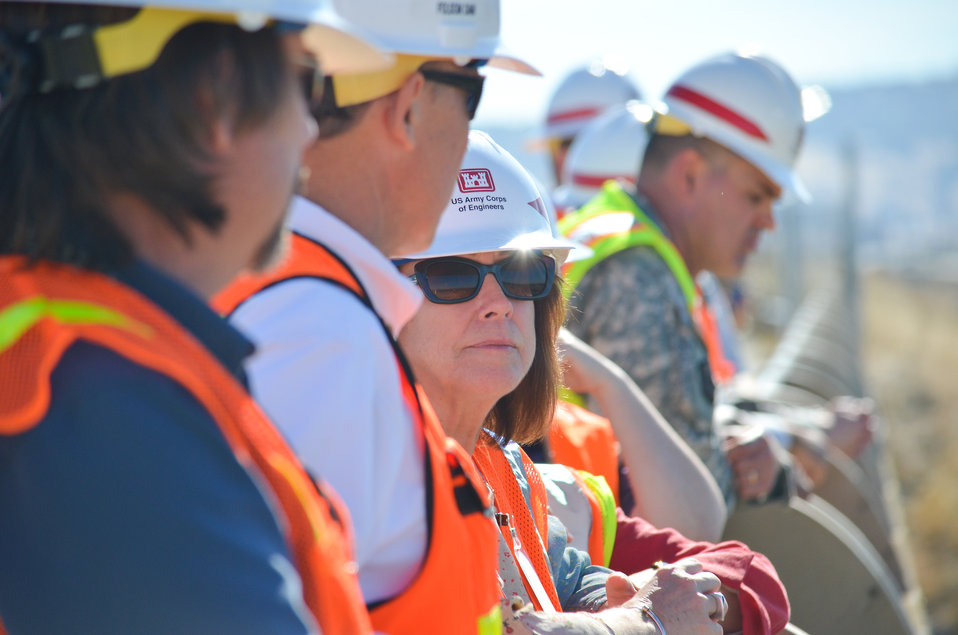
Secretary Darcy visits Folsom Dam Joint Federal Project

Jo-Ellen Darcy, Assistant Secretary of the Army for Civil Works (third from left), checks-in on progress on the Folsom Dam Joint Federal Project in Folsom, Calif., Sept. 27, 2011. The JFP is a joint effort of the U.S. Army Corps of Engineers and the Bureau of Reclamation to improve the safety of Folsom Dam and reduce flood risk for the Sacramento area.